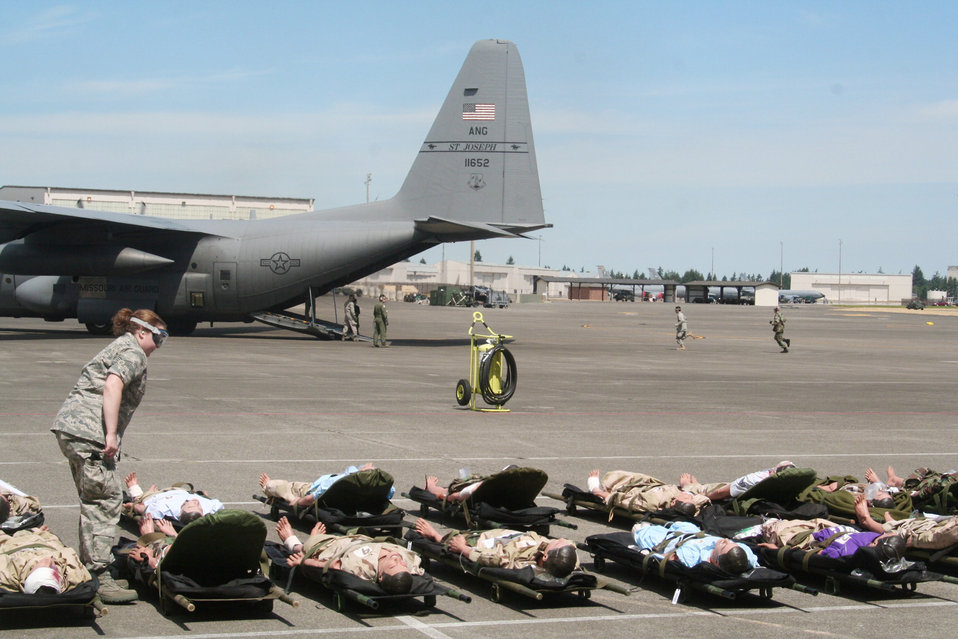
Guard members bring unique skills to war effort

Teams compete in the aeromedical evacuation events for Air Mobility Rodeo 2009 July 20 at McChord Air Force Base, Wash. More than 100 teams are participating in RODEO competition, including teams from seven foreign countries. Rodeo is the U.S. Air Force's and AMC's premier air mobility competition. It's an international combat skills and flying operations competition designed to develop and improve techniques, procedures and interoperability with international partners to optimize mobility partnerships and enhance mobility operations.